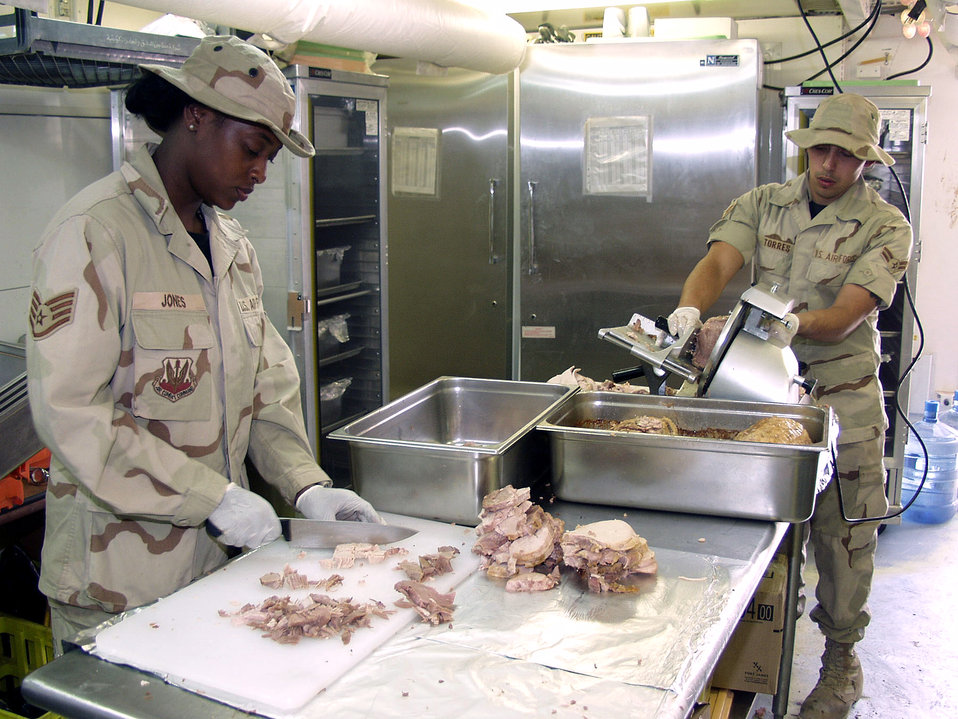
Turkey anyone?

OPERATION IRAQI FREEDOM –- Staff Sgt. Phyllis Jones and Airman 1st Class Hari Torres prepare turkey ala king for a Camp Chariot dinner meal. The services squadron food services flight supported a base surge of 590 percent in January. Sixty-three service members worked in food service before hostilities started and that number has risen to 83 members currently working in food services. Operation Iraqi Freedom is the multinational coalition effort to liberate the Iraqi people, eliminate Iraq’s weapons of mass destruction and end the regime of Saddam Hussein.